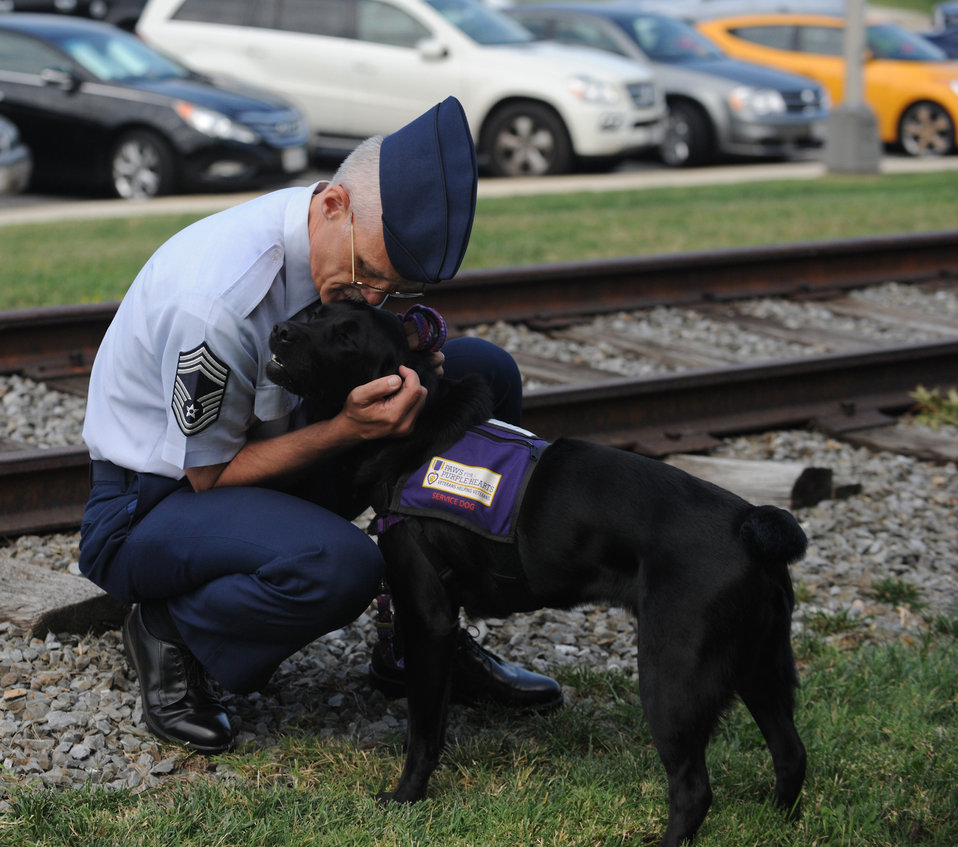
Chief discusses PTSD issues

Chief Master Sgt. Richard Simonsen hugs his service dog, Yoko, while on a walk. Simonsen lives with Post Traumatic Stress Disorder (PTSD), a condition he endured on a deployment to Afghanistan and the service dog helps him with his daily activities. PTSD can occur after one has been through a traumatic event.